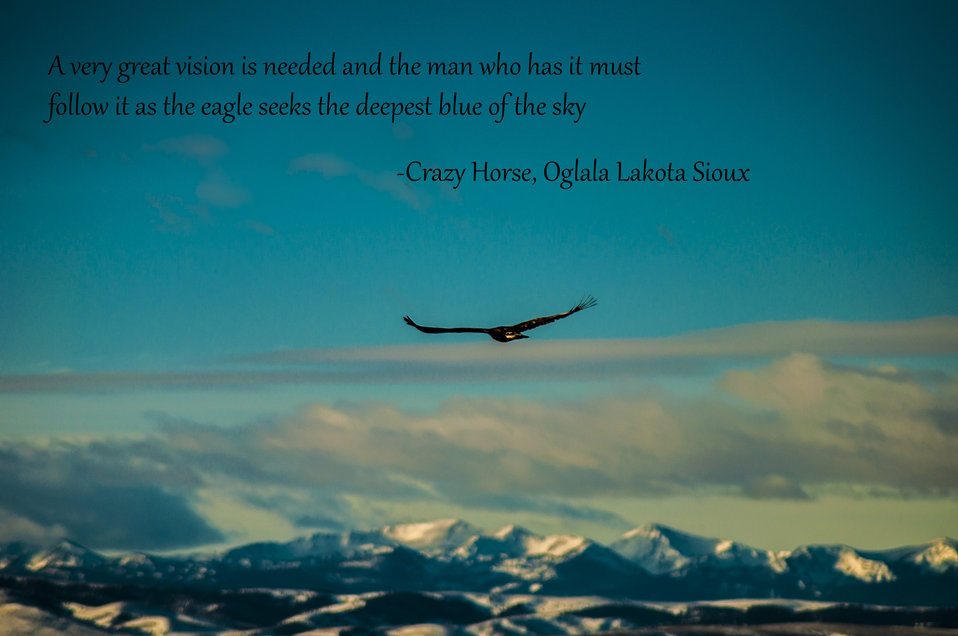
Golden Eagle